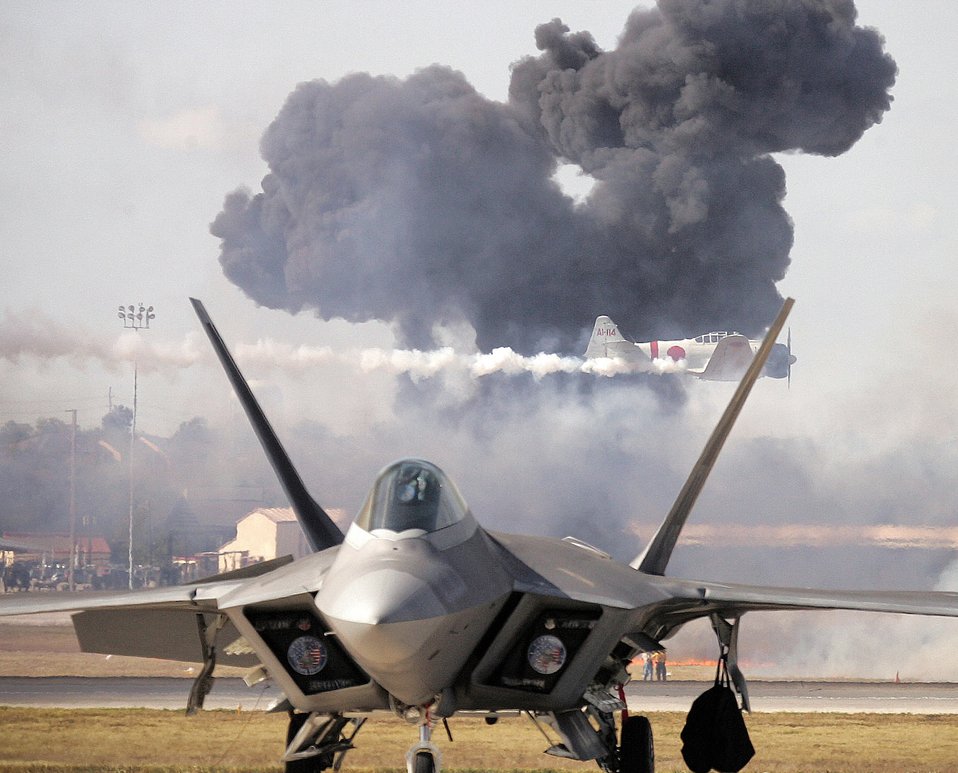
Under 'attack'

The Pearl Harbor reenactment of